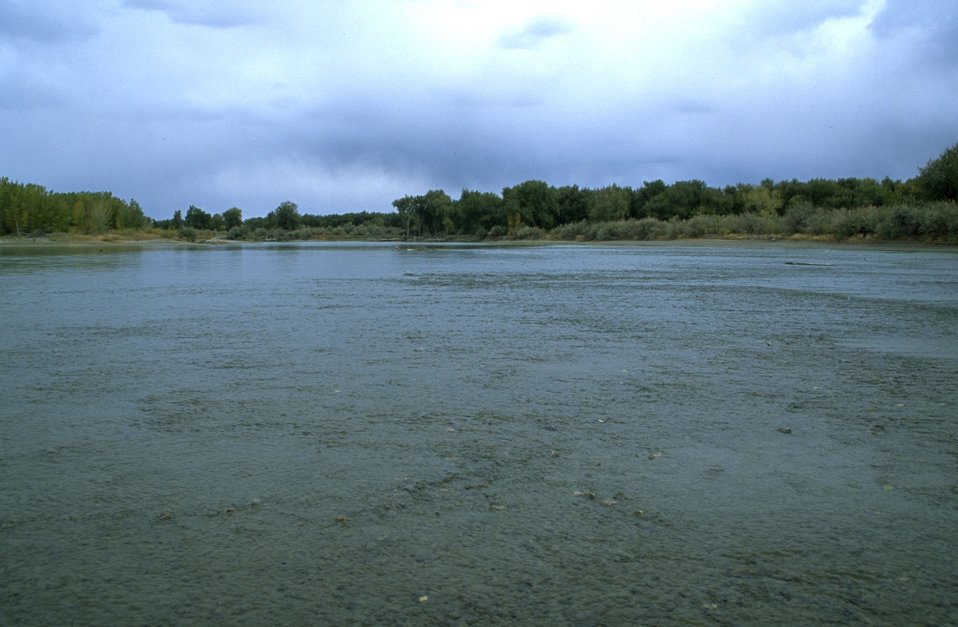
Yellowstone River near Howrey Island Recreation Area